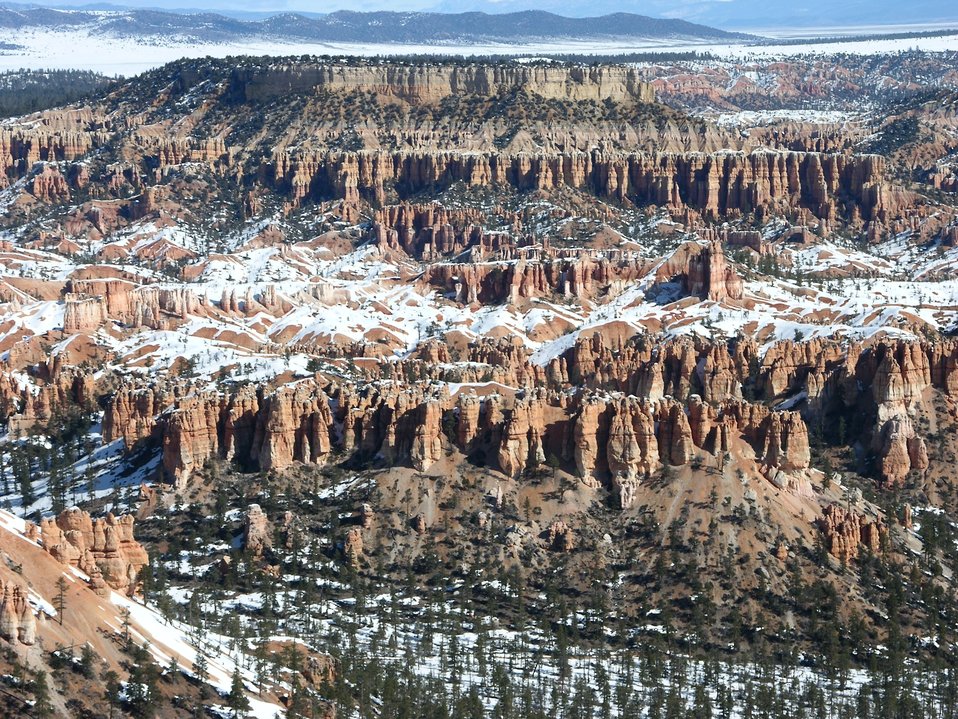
Bryce Canyon National Park